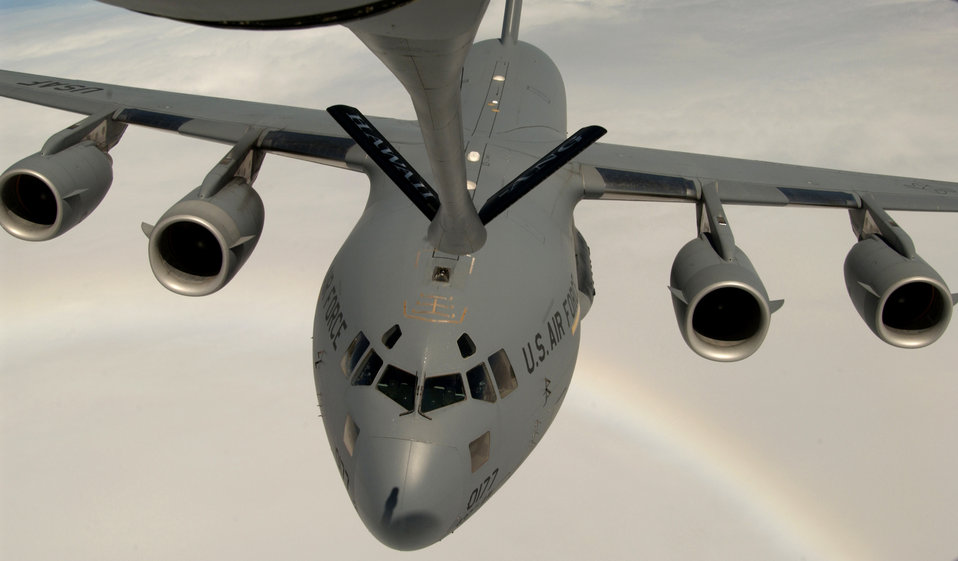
Over the rainbow

OVER THE PACIFIC -- A C-17 Globemaster III approaches a KC-135 Stratotanker to practice air-to-air refueling during a local training mission recently. The C-17 is on loan to the 15th Airlift Wing at Hickam Air Force Base, Hawaii, from the 437th AW at Charleston AFB, S.C. The KC-135 is assigned to the Hawaii Air National Guard's 203rd Air Refueling Squadron.